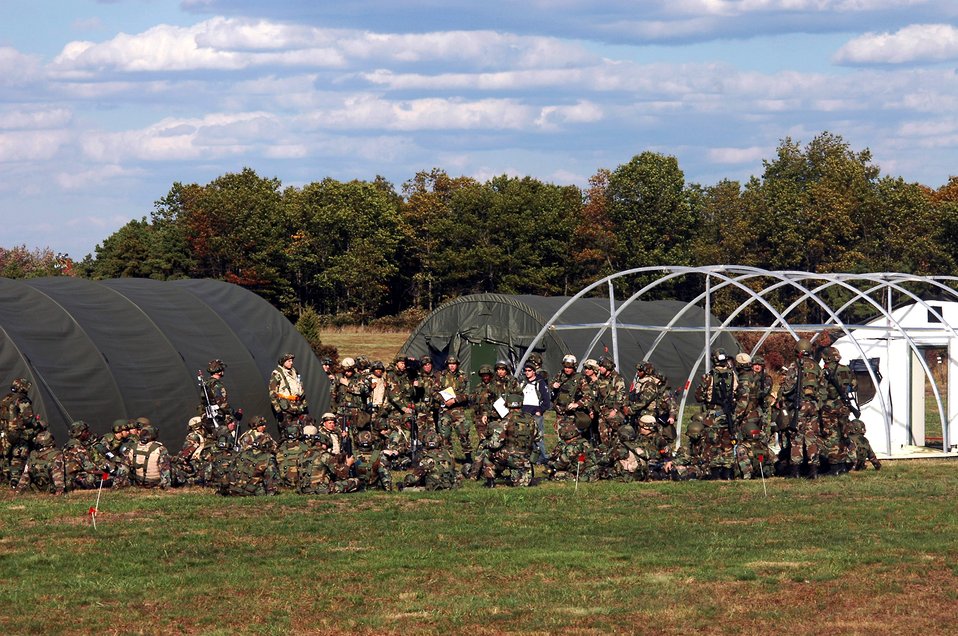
Eagle Flag preps Airmen for combat

Airmen participating in Air Force Exercise Eagle Flag 07-1 as part of the